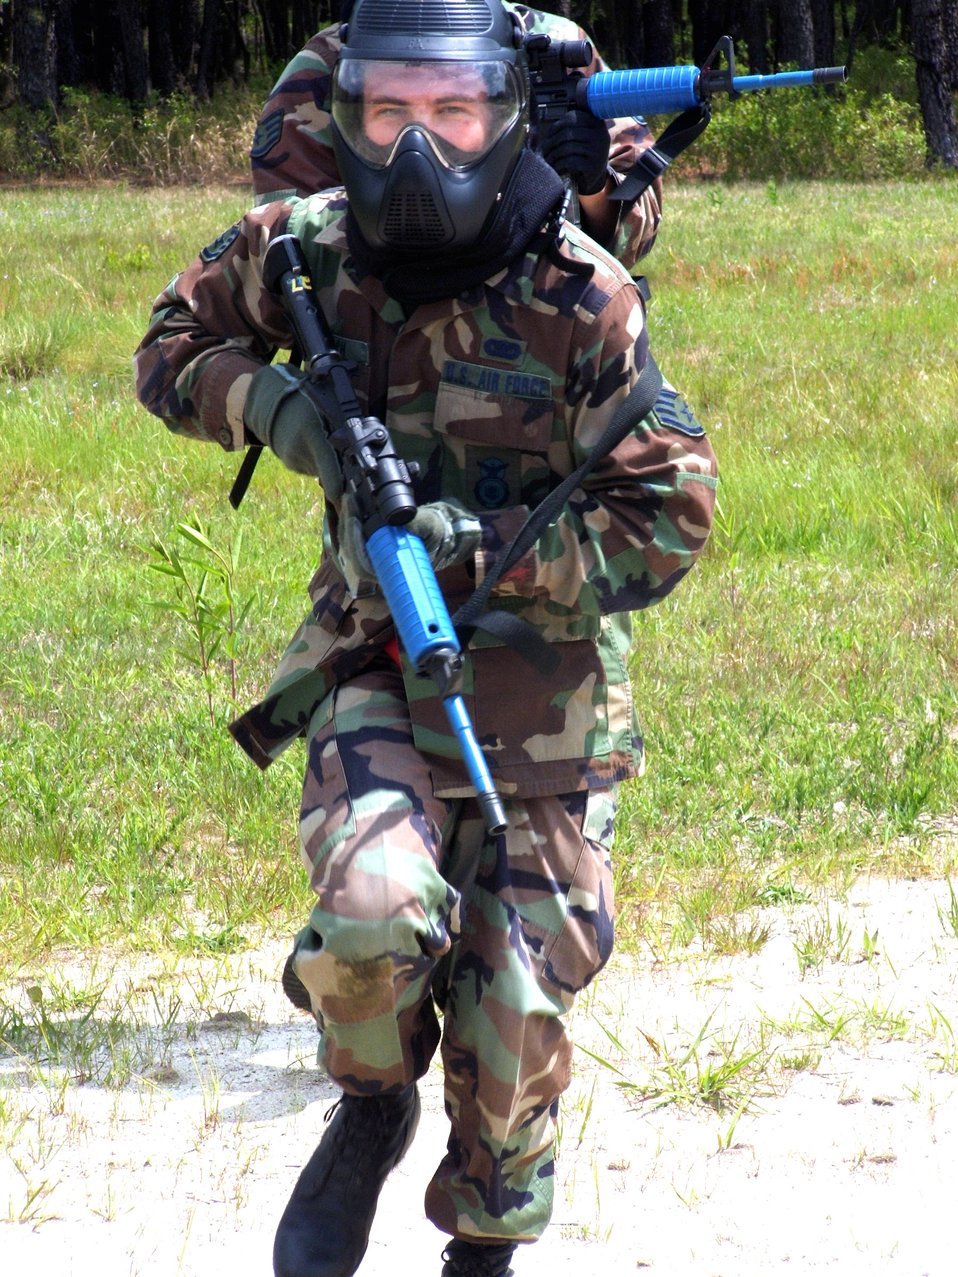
Phoenix Raven Airmen are a special breed

Staff Sgt. Adam Marsh maneuvers with another Phoenix Raven course student during use-of-force training on May 17, 2006, at Fort Dix, N.J. Raven students, who include Air Force security forces, Navy masters at arms and Army military police, train in combat first aid, tactical self defense and aircraft security. The course is taught by instructors from the Air Mobility Warfare Center's 421st Combat Training Squadron. Sergeant Marsh is with the 820th Security Forces Group at Moody Air Force Base, Ga.